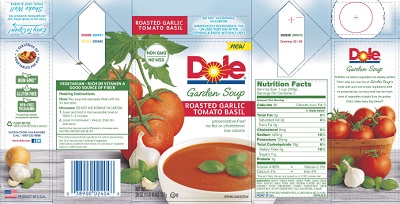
RECALLED - Garden soup “Roasted Garlic Tomato Basil”

June 8, 2014 – Product Recall – Dole Packaged Foods Recalls Roasted Garlic Tomato Basil Soup in Texas Due to Undeclared Milk Allergen.